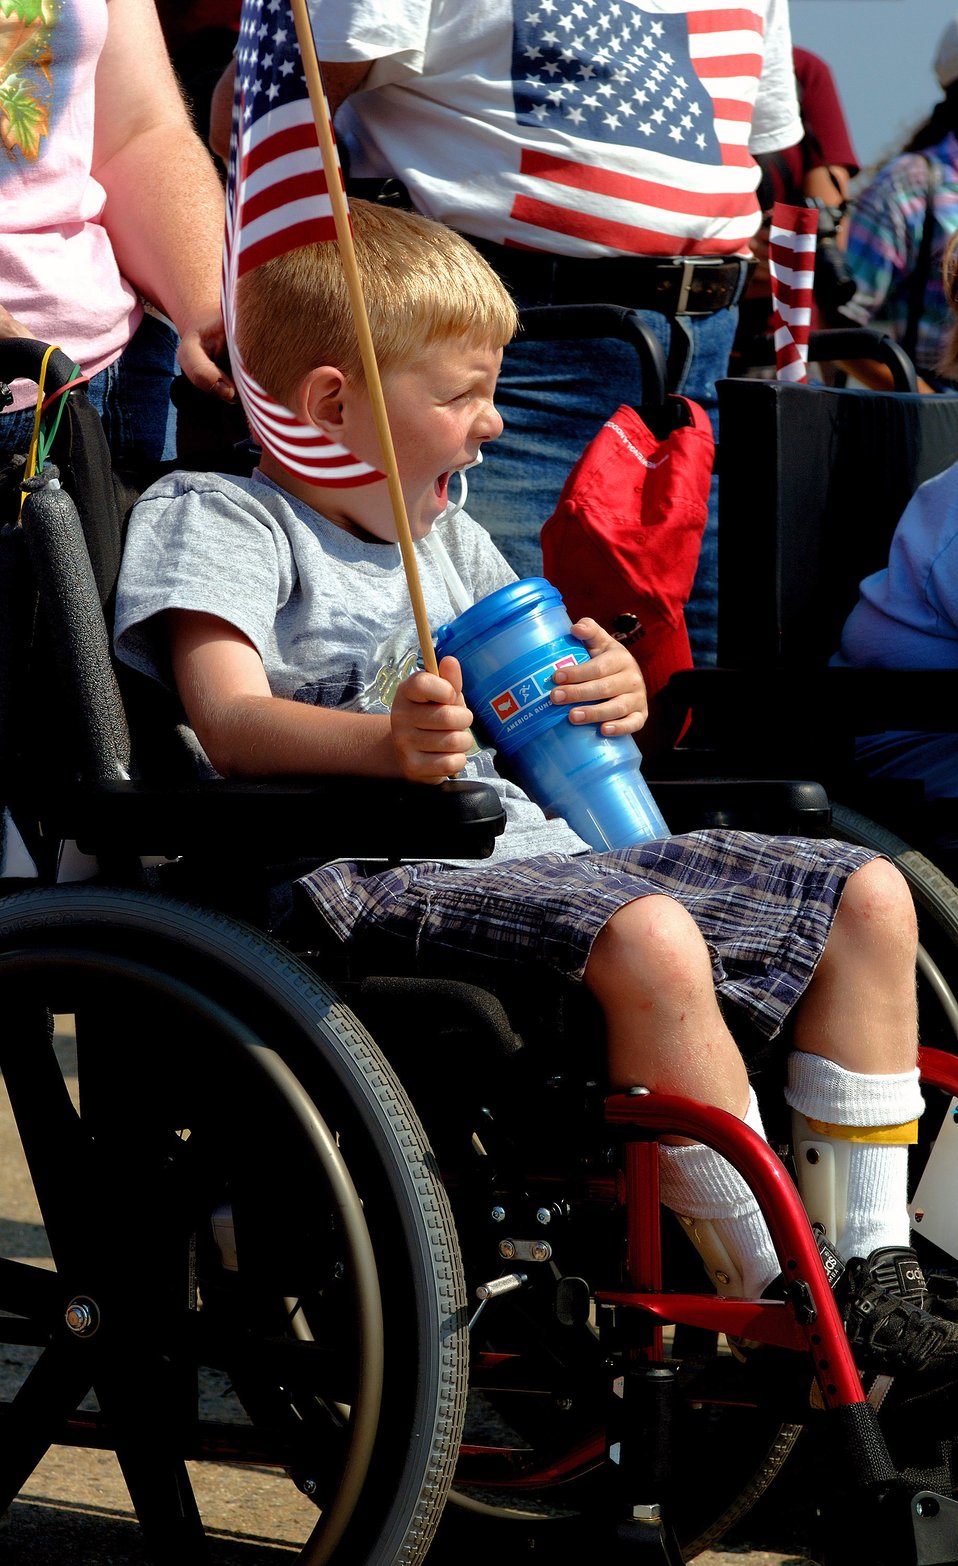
Pease Airmen provide a day to remember

Seven-year-old Teagan from Portsmouth, N.H. cheers for the U.S. Air Force Honor Guard Drill Team during a performance for children with special needs Aug. 17 at Pease Air National Guard Base, N.H. The team's performance was a part of the 2007 Wings of Hope Air Show at Pease in conjunction with Air Force Week New England.